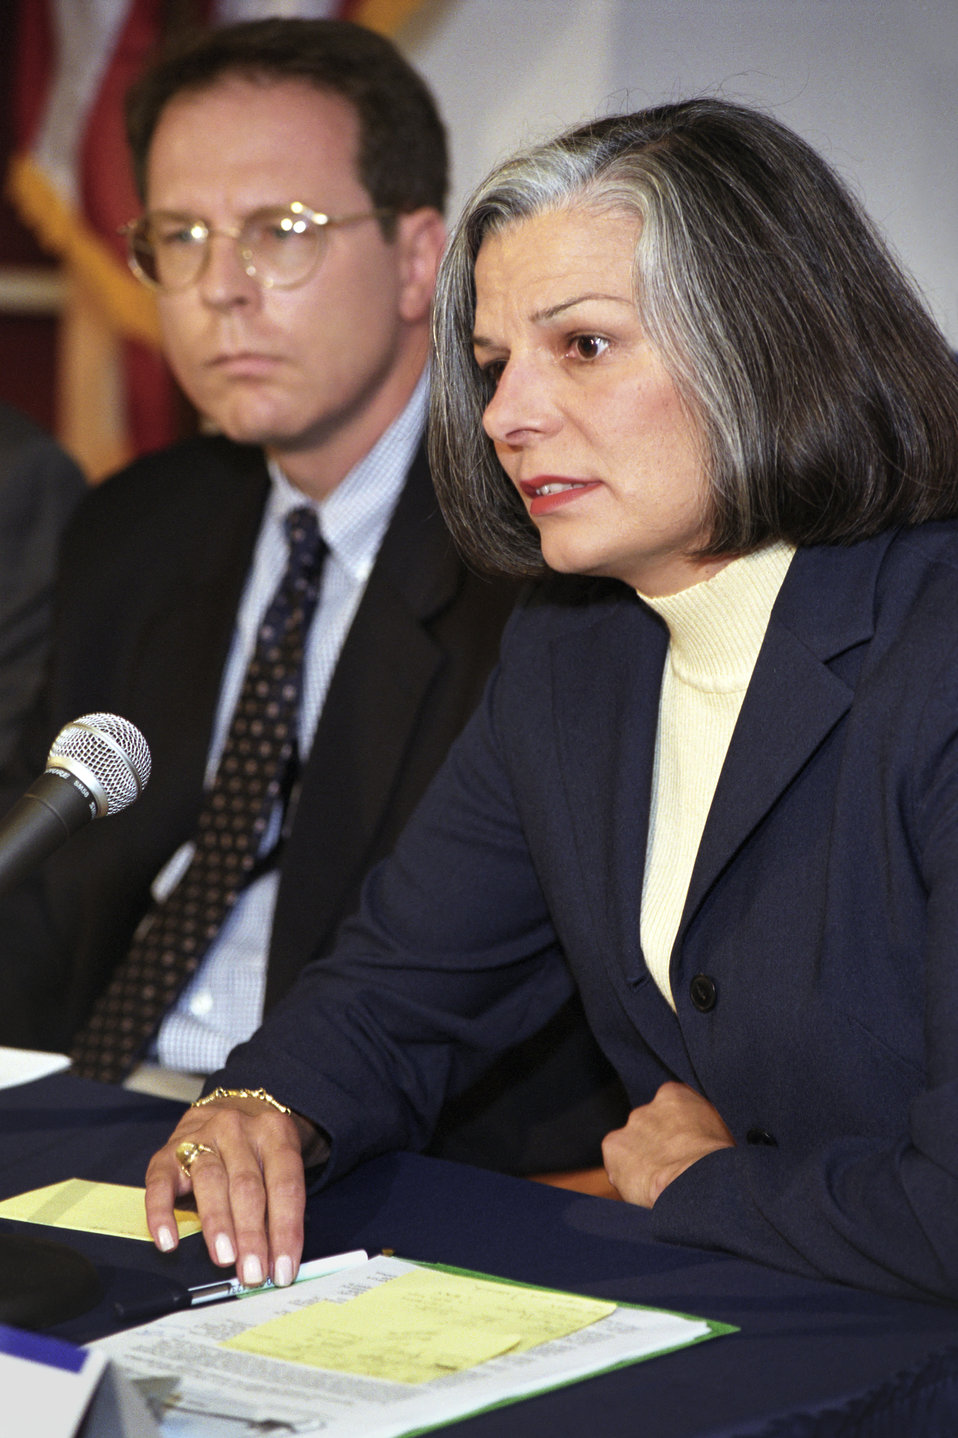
Centers for Disease Control and Prevention Bioterrorism Preparedness Press Briefing, August 27, 2002.